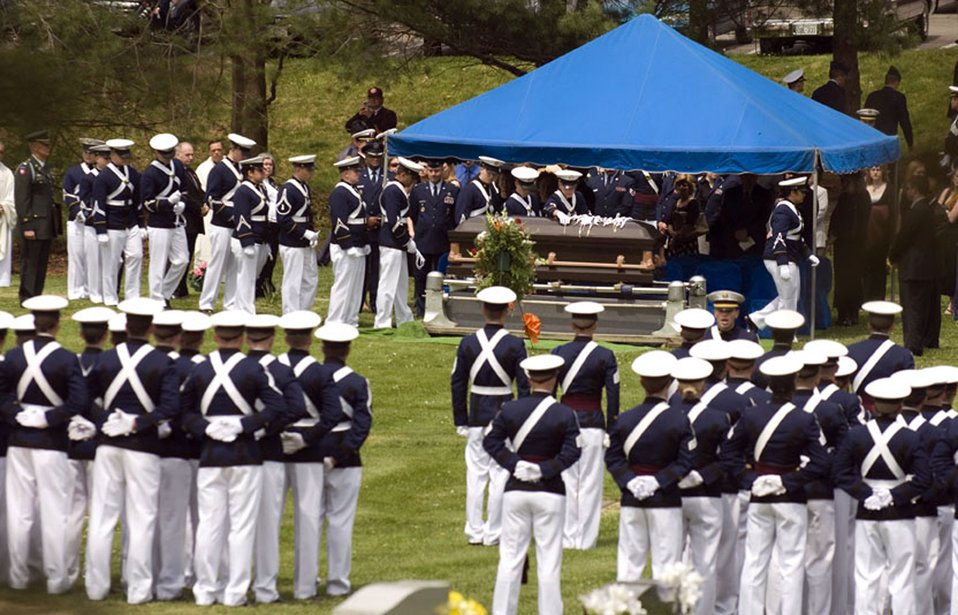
Virginia Tech corps of cadets pay honors to one of their own

The Virginia Tech Corps of Cadets paid honors to one of their classmates in Blacksburg, Va., April 25. Cadet Matthew La Porte, a sophomore in Air Force ROTC Detachment 875 and the Virginia Tech Corps of Cadets, was one of the 32 students and faculty killed during the shooting incident at the school April 16. At the end of the service, Cadet La Porte's classmates placed their white Presidential Citation cords on their classmate's casket.